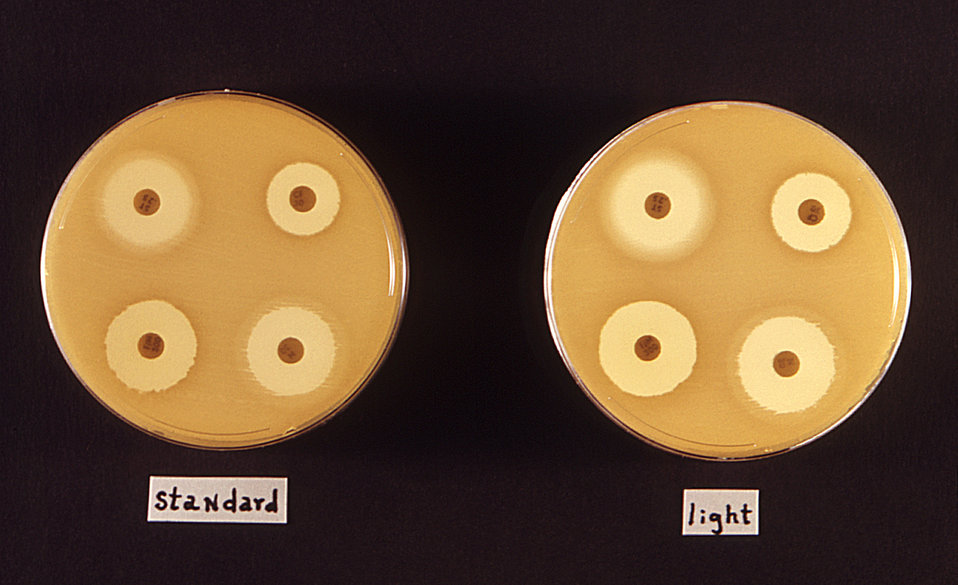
This 1972 image depicted two Mueller-Hinton agar culture plates that had been used in an antibiotic susceptibility test (AST). Known as the Kirby-Bauer method, each of the small labeled discs, or wafers, contained an antibiotic cocktail. The light halos surrounding each disc, also known as 'reaction zones', represented regions in which the bacteria on the agar's surface did not thrive, due to their sensitivity to the antibiotic that had been soaked into these respective discs.